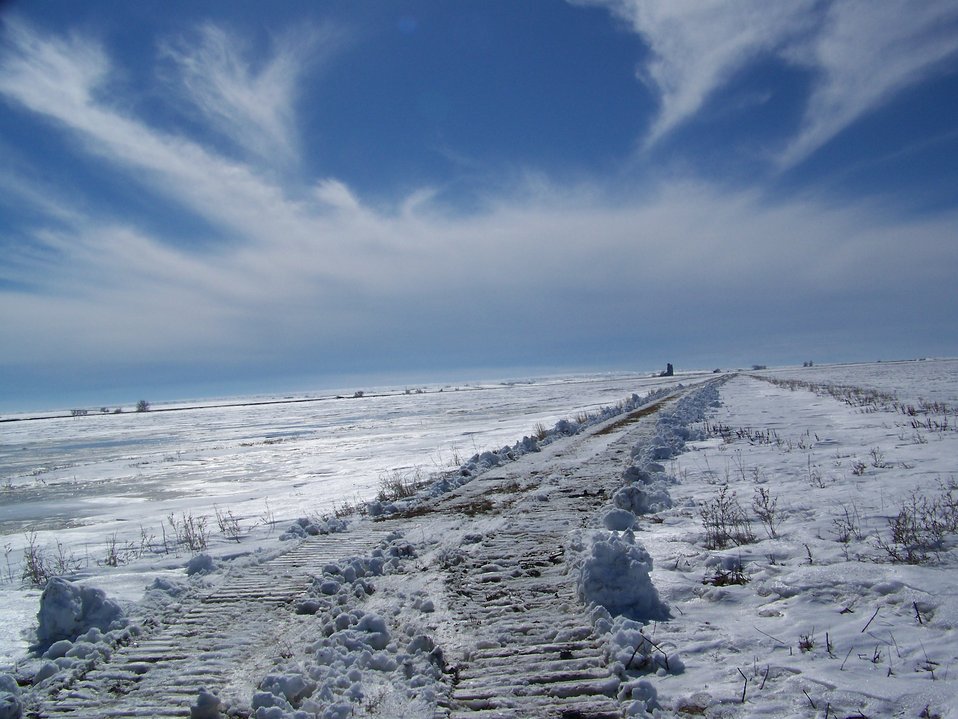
Bowdoin NWR Winter

Winter on Bowdoin NWR